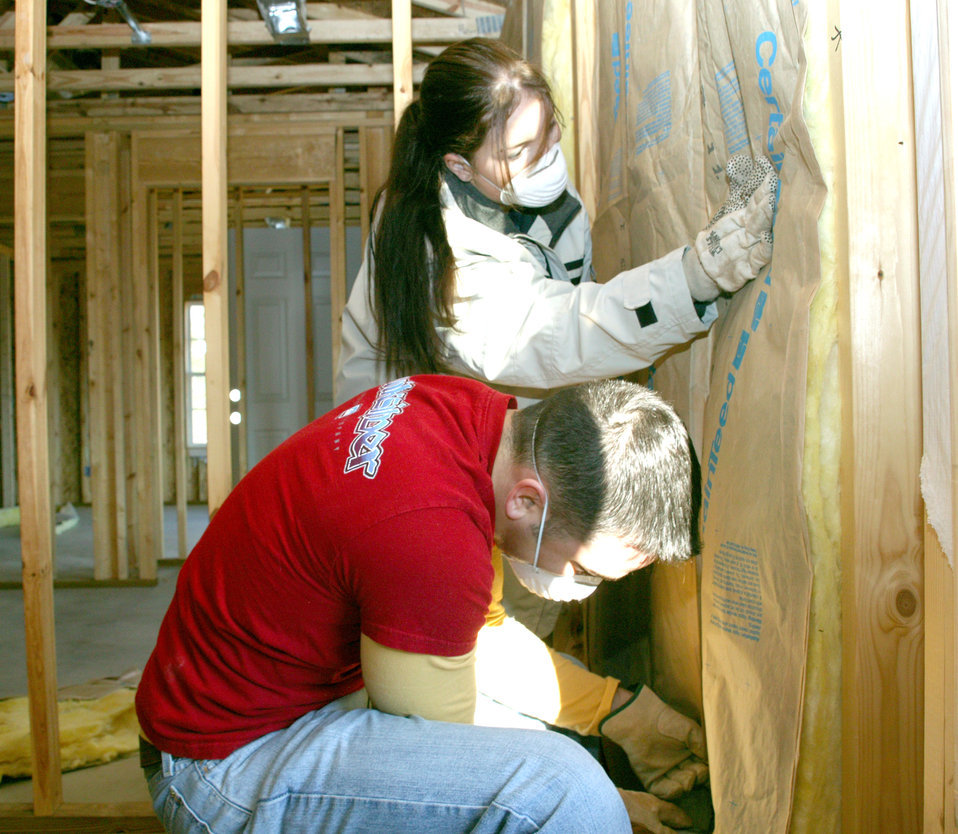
Habitat for Humanity

SUMTER, S.C. (AFPN) -- Airman 1st Class Melissa Almaraz and her husband, Senior Airman Sergio Almaraz install insulation while volunteering to build homes for the Habitat for Humanity. Airman Almaraz is assigned to the 20th Operations Support Squadron at Shaw Air Force Base, S.C., and her husband is assigned to the 20th Communications Squadron.